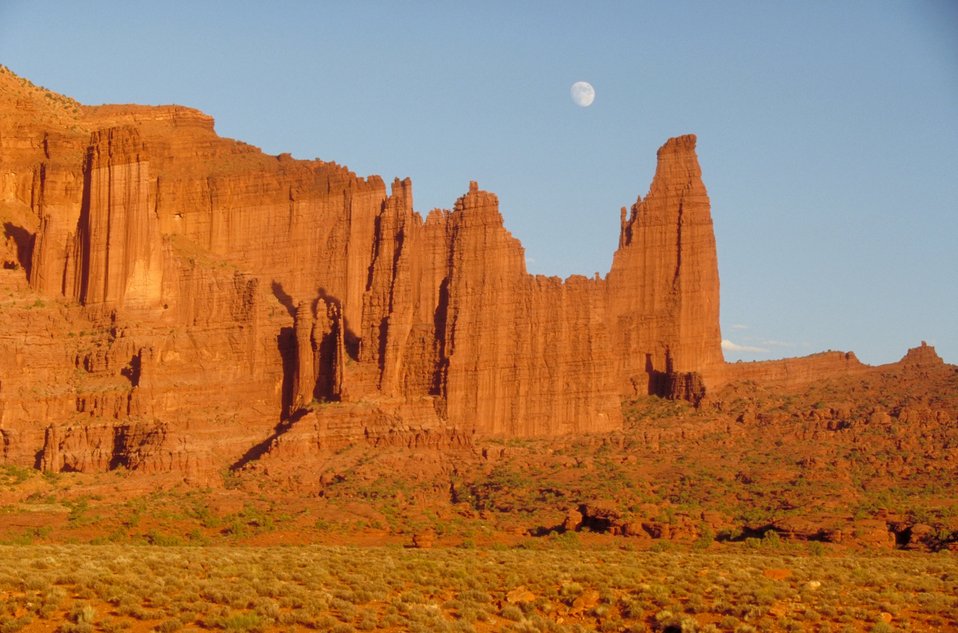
Fisher Towers along Highway 128, near Moab, Utah.